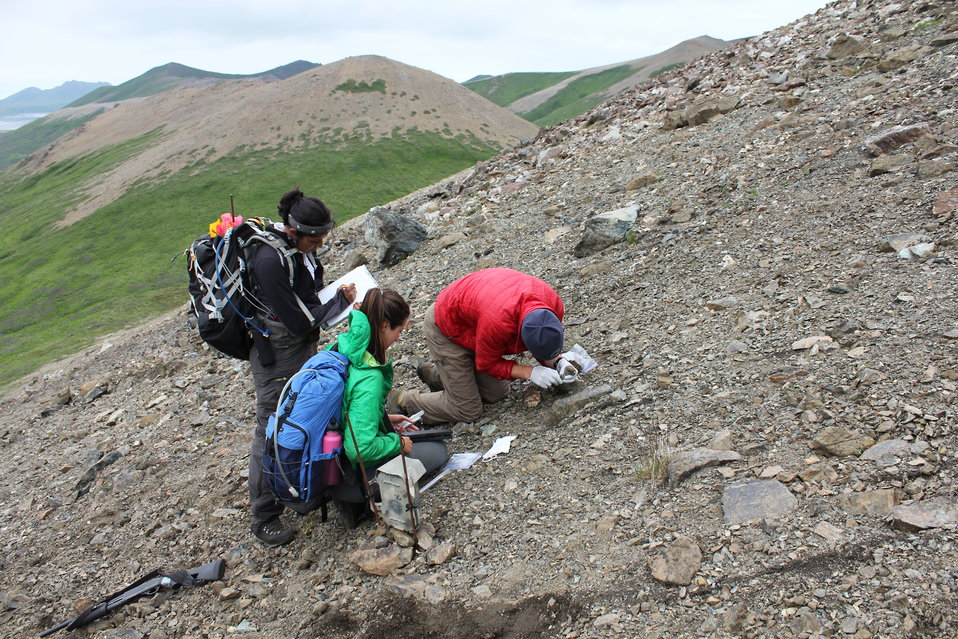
Conducting research at a Kittlitz's murrelet nest

Photo Credit: Marie McCann/USFWS
Source: Kodiak NWR
Since 2008, the Kodiak Refuge has conducted research on the nesting ecology of the Kittlitz's murrelet, a rare seabird.